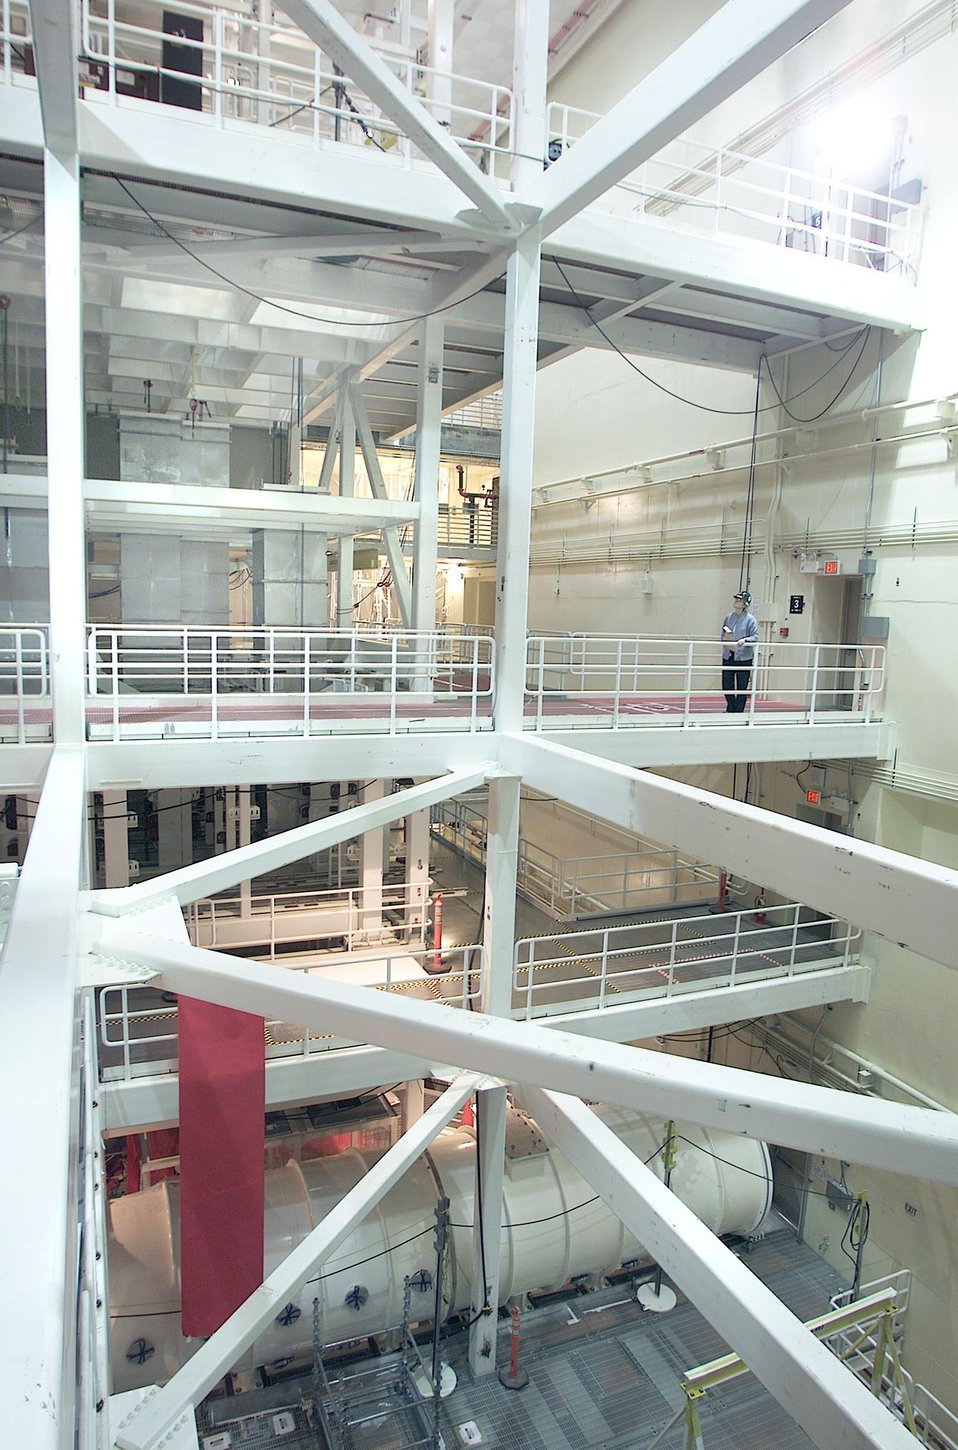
NIF'S SWITCHYARD 2 INFRASTRUCTURE WITH TARGET DIAGNOSTIC CHAMBER BENEATH.

THE NATIONAL IGNITION FACILITY AT LLNL ENABLES KEY PROGRAMS AND TECHNOLOGIES THAT SUPPORT DOE'S NATIONAL NUCLEAR SECURITY ADMINISTRATION DEFENSE PROGRAMS AND LLNL MISSIONS, ENSURING THAT THE NATION'S NUCLEAR WEAPONS REMAIN SAFE, SECURE AND RELIABLE. NIF, ONE OF THE CORNERSTONES OF DOE'S STOCKPILE STEWARDSHIP PROGRAM, WILL INTEGRATE THE INERTIAL CONFINEMENT FUSION PROGRAM INTO THE OVERALL STOCKPILE STEWARDSHIP PROGRAM AND FOSTER THE DEVELOPMENT OF ASSOCIATED LASER TECHNOLOGIES.